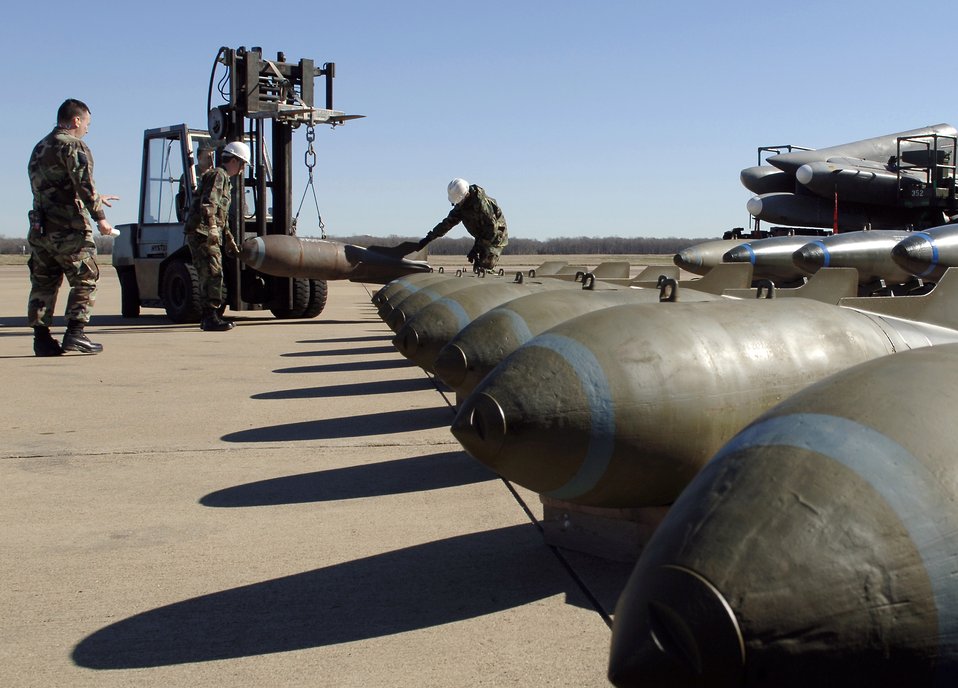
Display of might

BARKSDALE AIR FORCE BASE, La. (AFPN) -- Munitions Airmen align an M-117 bomb with other bombs. The munitions display the B-52 Stratofortress' full capabilities. The Airmen are maintainers from the 2nd Munitions Squadron here.